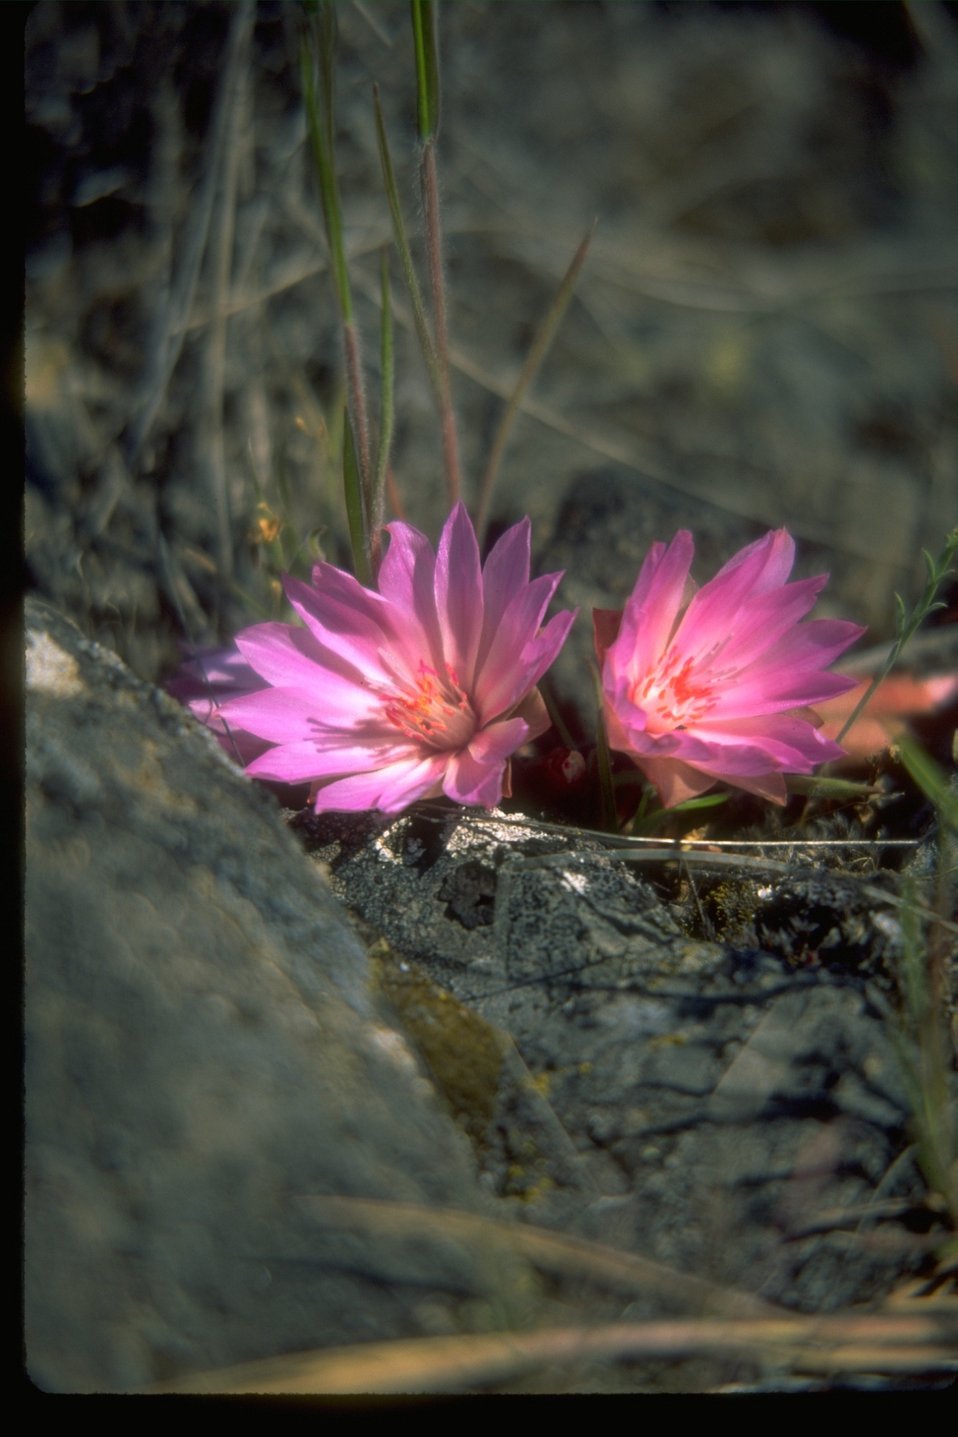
Bitterroot or Rock Rose (Lewisia rediviva), historically important to Native Americans as a source of food.